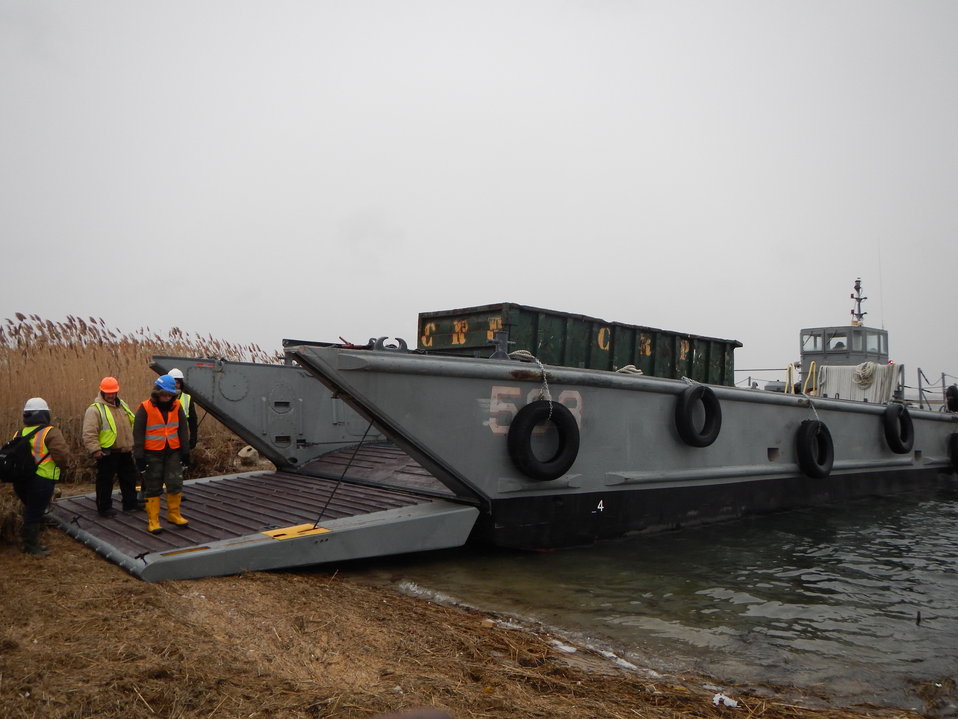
Lido Beach Cleanup-2

Cleanup crews begin a massive debris removal effort at Lido Beach Wildlife Management Area on Long Island.